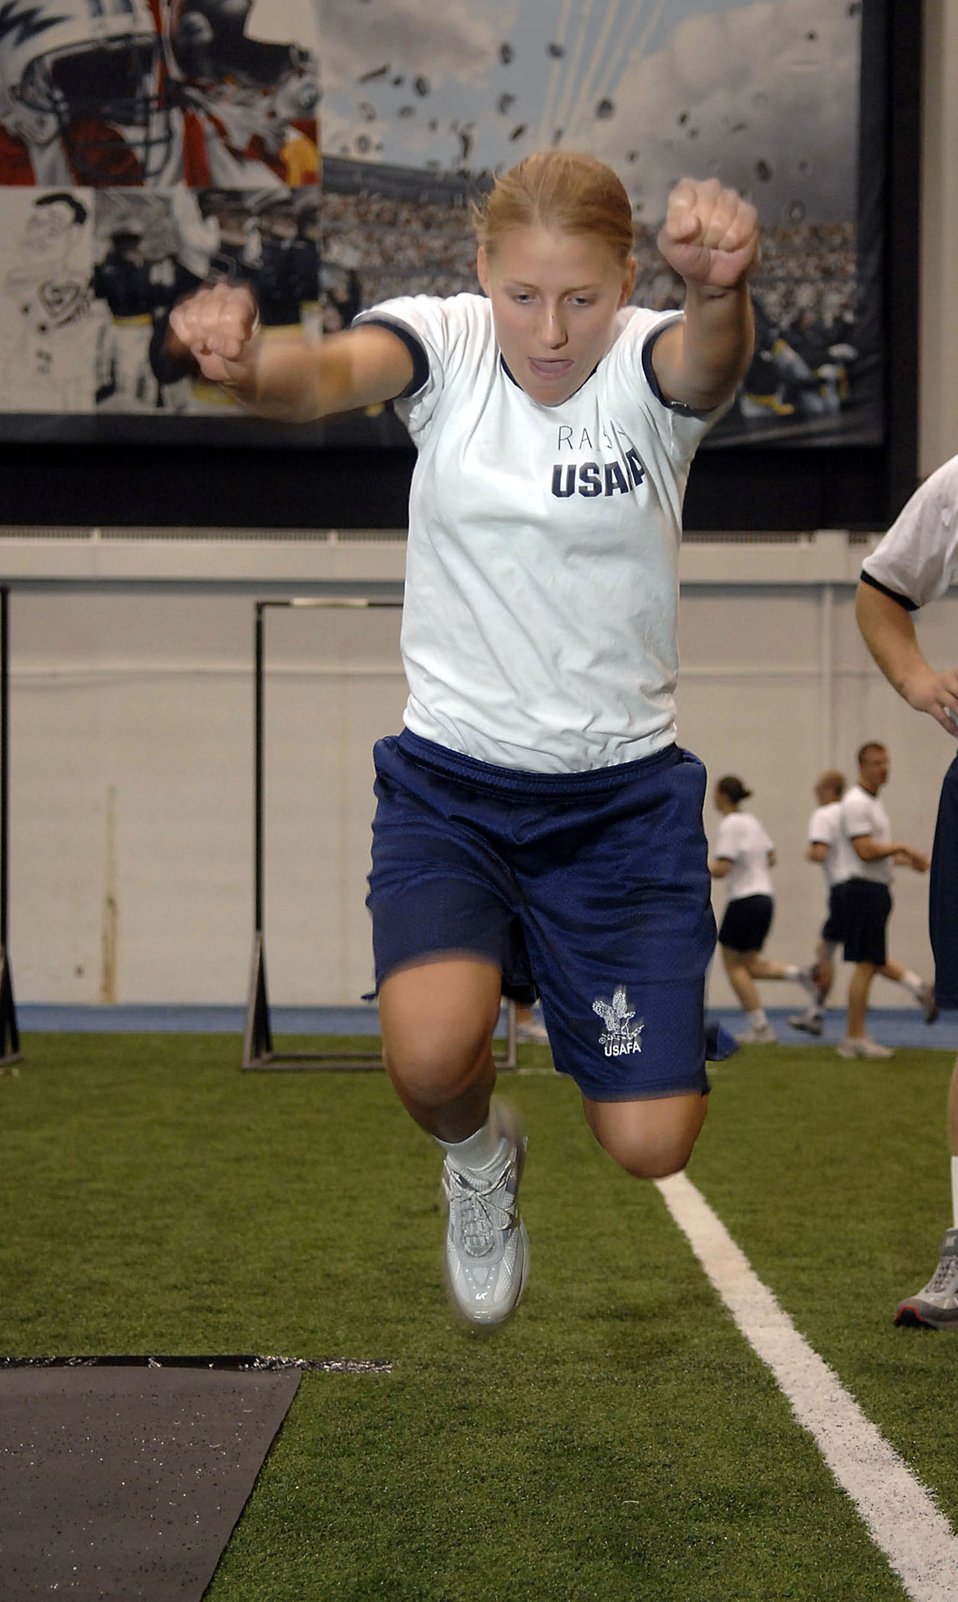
Put to the test

Cadet 4th Class Sarah Ruckriegle performs a standing long-jump during her physical fitness test July 12 at the U.S. Air Force Academy, Colo. Cadet Ruckriegle got the maximum score by completing over a 7'2